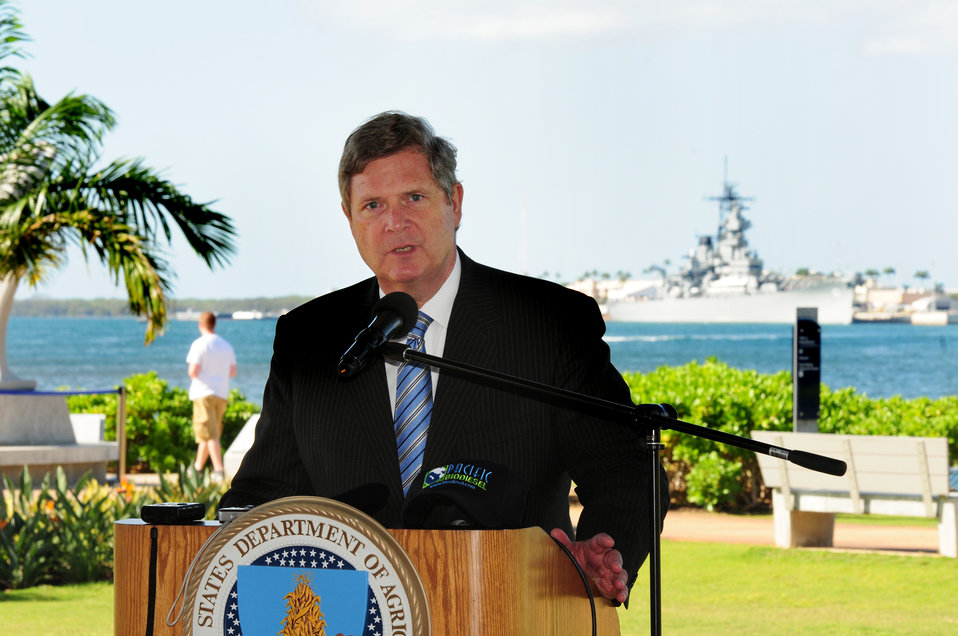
Agriculture Secretary Tom Vilsack highlights the Obama Administration's commitment to renewable energy at the.World War II Valor in the Pacific National Monument's Pearl Harbor Visitor Center. Pearl Harbor naval base was the first Hawaii military marine fleet to use biodiesel, replacing the Department of Navy-operated tour boats that shuttled visitors to and from the USS Arizona Memorial with five new boats capable of running on 100% biodiesel. Near Honolulu, HI, on Tuesday, January 10, 2012.